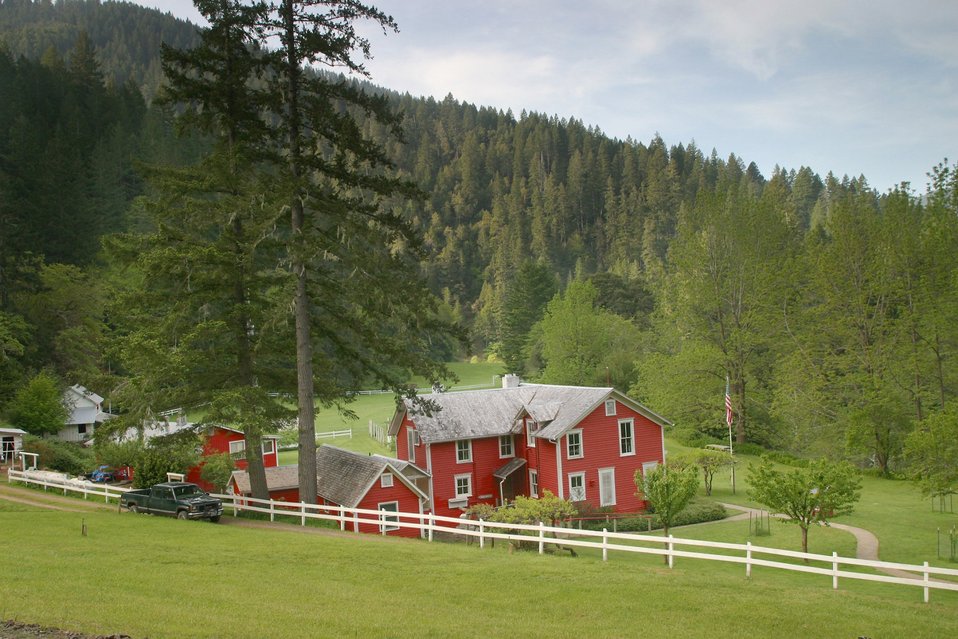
Wild section of the Rogue River from Grave Creek to Foster Bar May 19 to May 22.